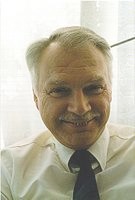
Portrait of J. H. F. (Hans) van Abeelen in his home in Enschede, The Netherlands. Nederlands: Portret van J. H. F. (Hans) van Abeelen thuis in Enschede.